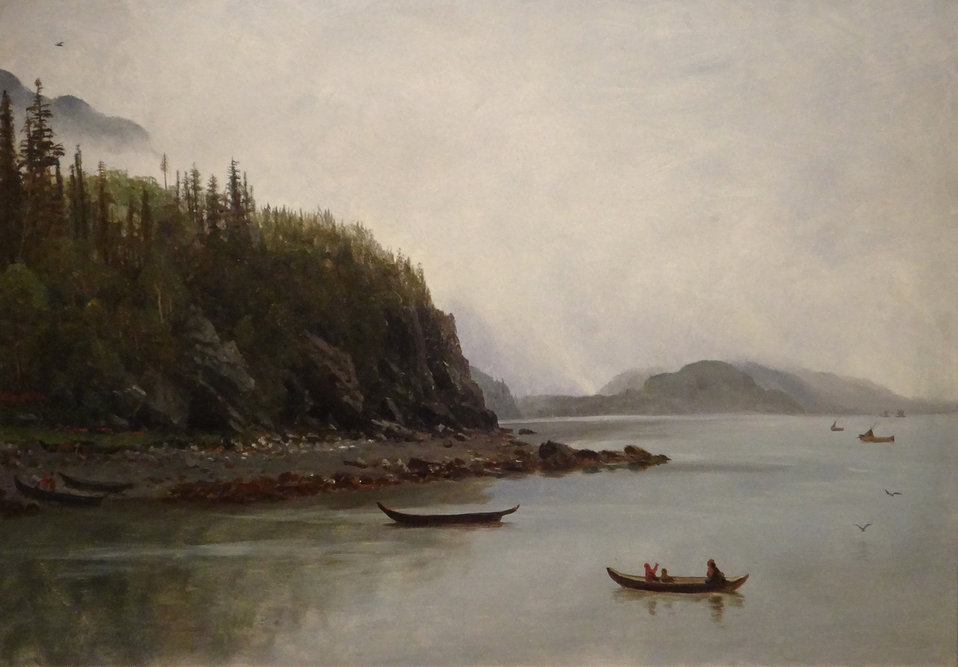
Albert Bierstadt - Indians Fishing